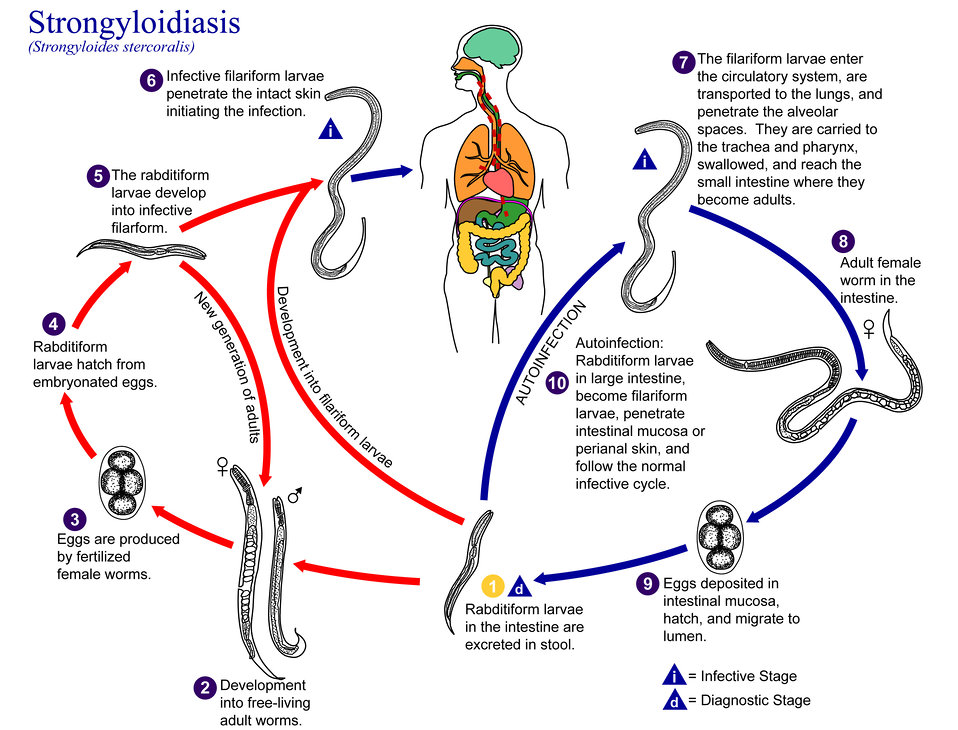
This is an illustration of the life cycle of Strongyloides stercoralis, the causal agent of Strongyloidiasis.